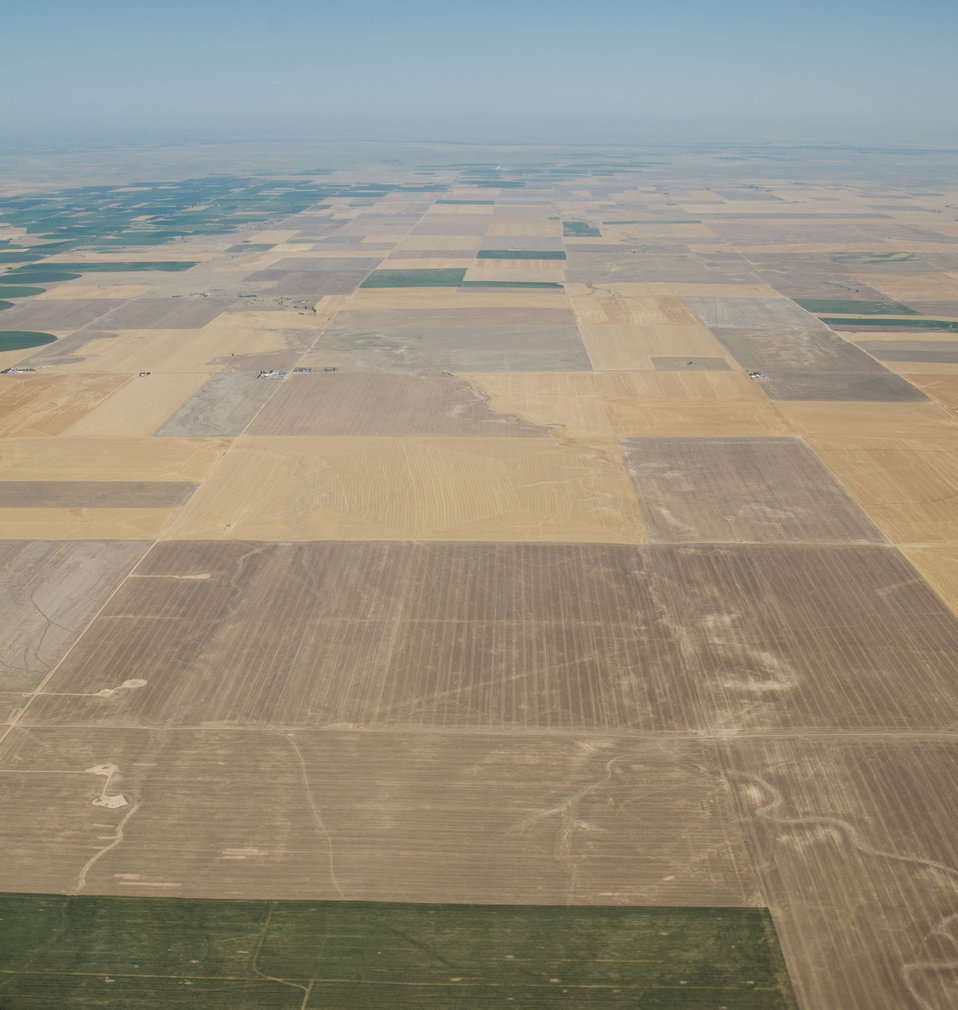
Aerial views of drought affected Colorado farm lands, 80 miles east of Denver, Colorado on Saturday, July 21, 2012.